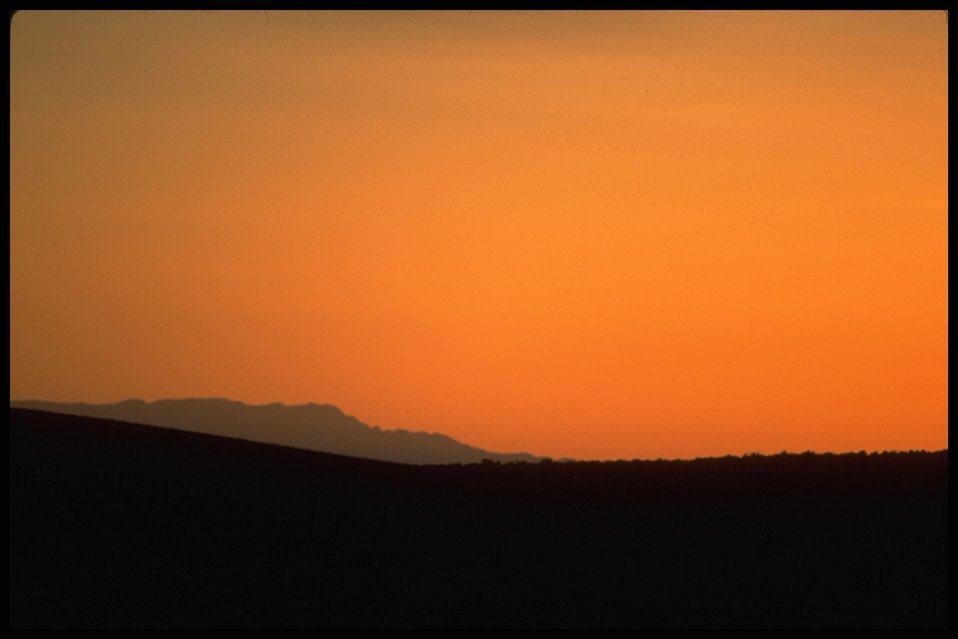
Lakeview District Sunrise.